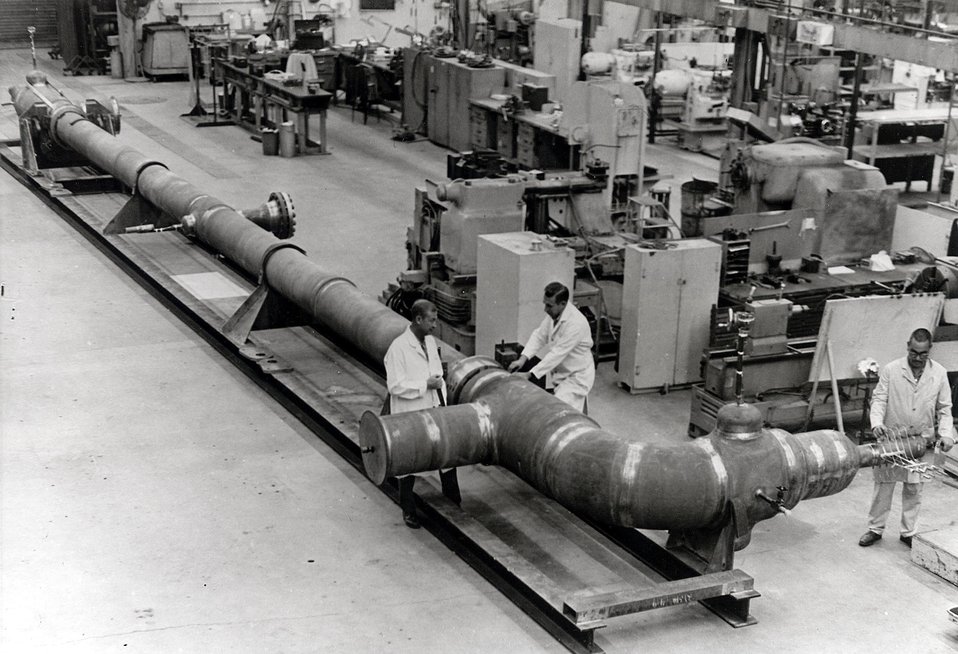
A prototype modular steam generator of the type used in the LMFBR Demonstration Plant was built by the Atomics International Division of North American Rockwell to simulate the actual operating conditions for testing purposes at the Atomic Energy Commission's Liquid Metal Engineering Center in Santa Susana, California. Circa 1973.